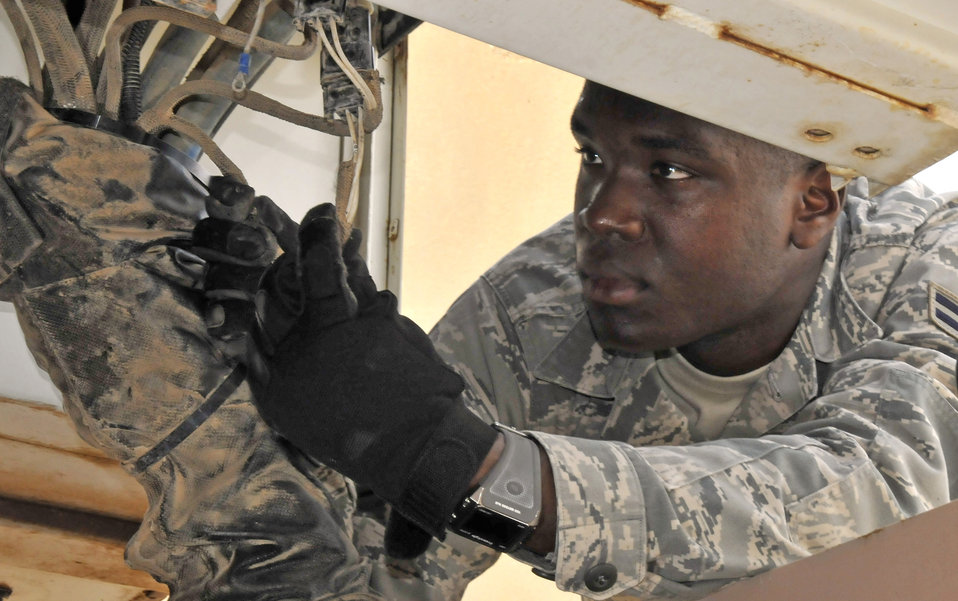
Balad Airmen

Airman 1st Class David O'Loughlin inspects a wire harness on a U30 aircraft tow vehicle July 12, 2010, at Joint Base Balad, Iraq. The U30 tow vehicle weighs approximately 100,000 pounds, making it useful for pushing and pulling heavy aircraft like the C-17 Globemaster III. Airman O'Loughlin is a 521st Air Mobility Operations Group, Det. 5 crew chief.